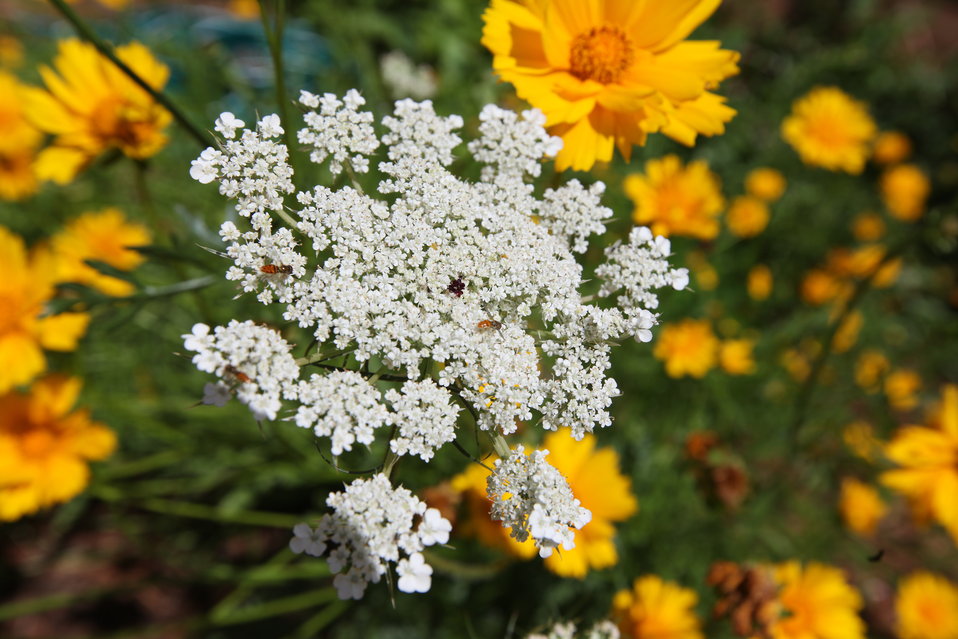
Queen Anne's Lace

Above view of a Queen Anne's lace flower in the pollinator garden outside the Regional Office in Hadley, MA.